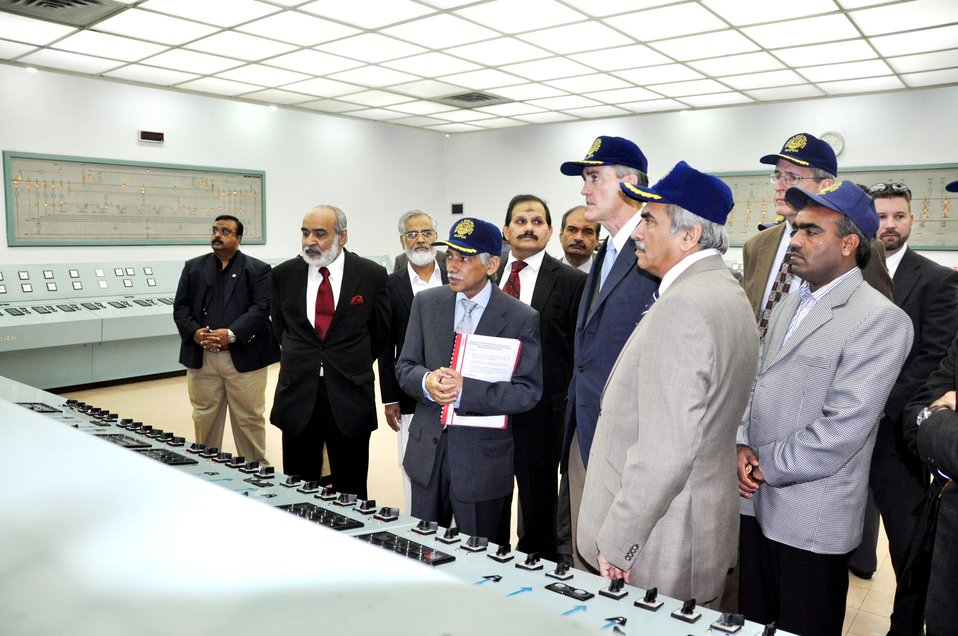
At the control center